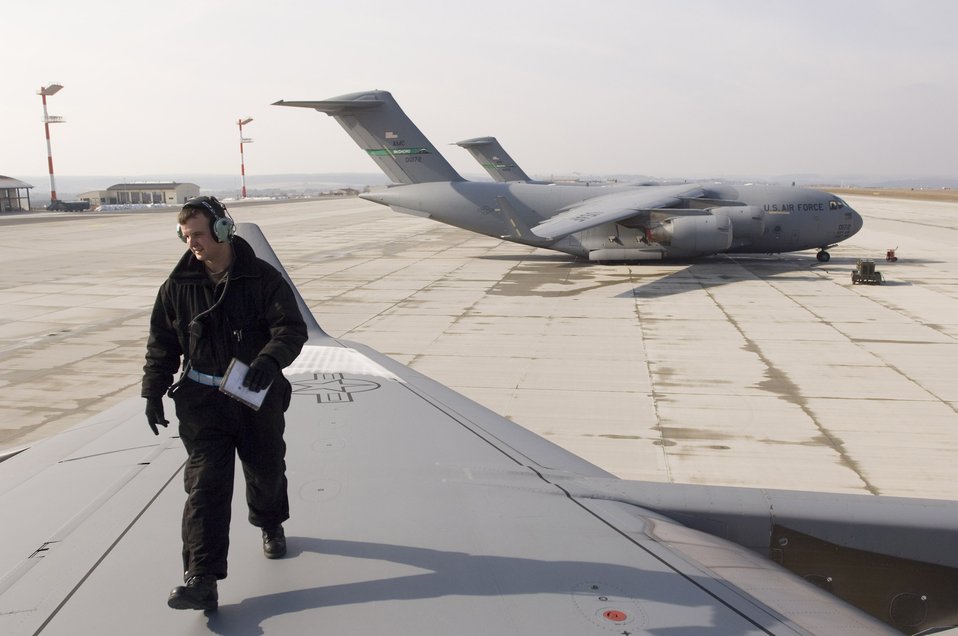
Airlift Gas-n-Go

Staff Sgt. Griffith Hemphell inspects a C-17 Globemaster III at Spangdahlem Air Base, Germany, Wednesday, March 22, 2006. Sergeant Hemphell is an air hydraulics specialist with the 726th Air Mobility Squadron.